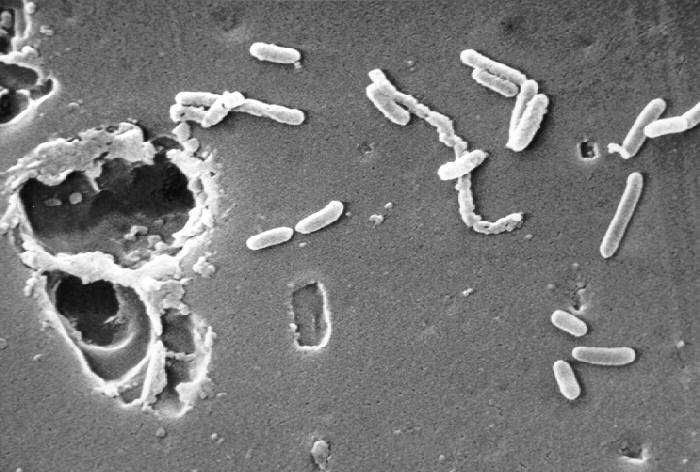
Scanning electron micrograph (SEM) of Pseudomonas aeruginosa bacteria.